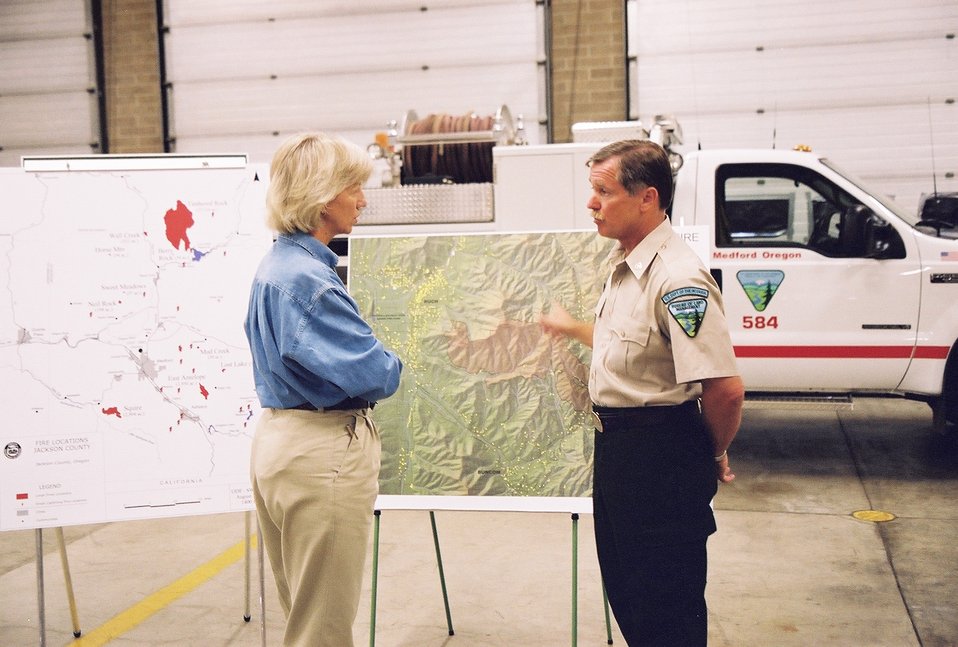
Interior Secretary Gale Norton is briefed on ruralurban interface issues in southwest Oregon by BLM Medford District Manager Ron Wenker prior to President Bush's visit to the Squires Fire. August 22, 2002 Photo: John Craig